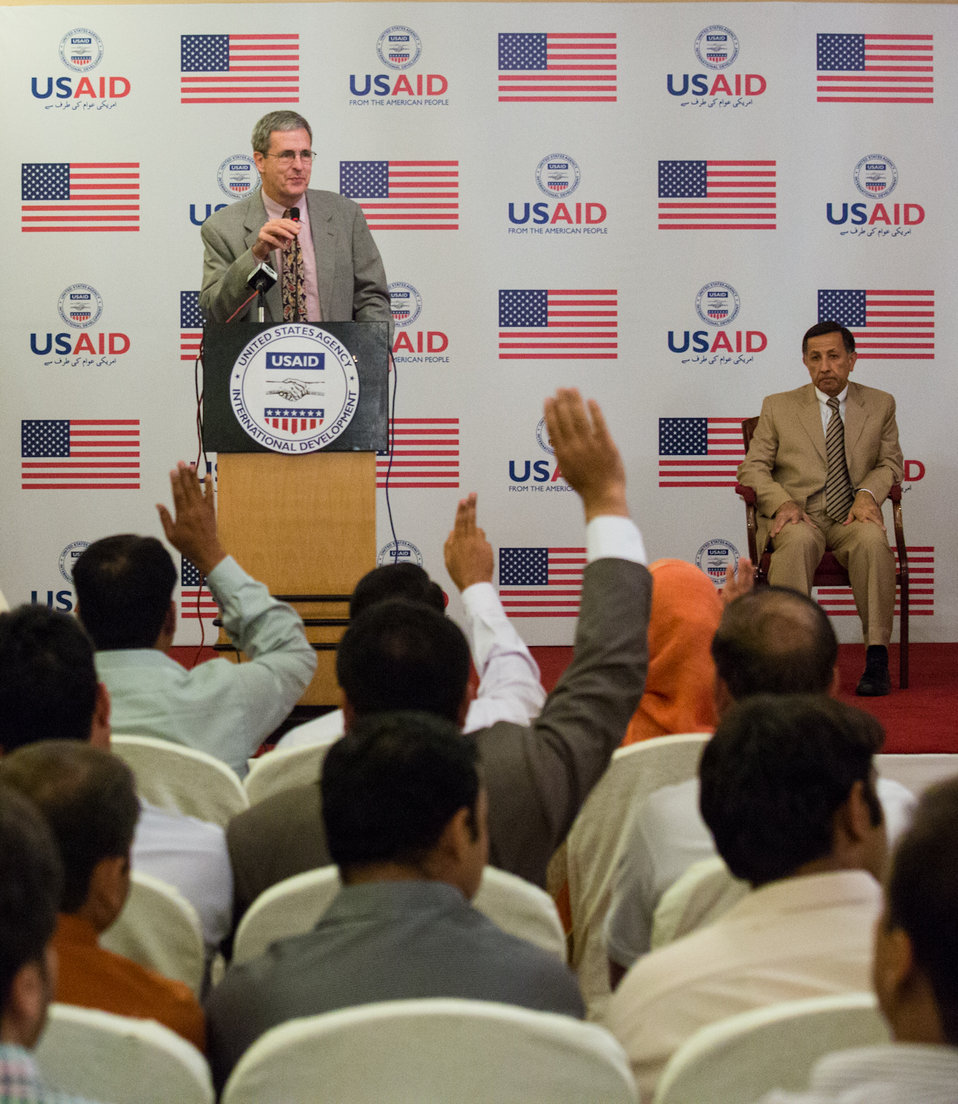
Islamabad, September 26 2012 - Jonathan Conly, USAID Pakistan Mission Director, speaking to the participants of the training program.